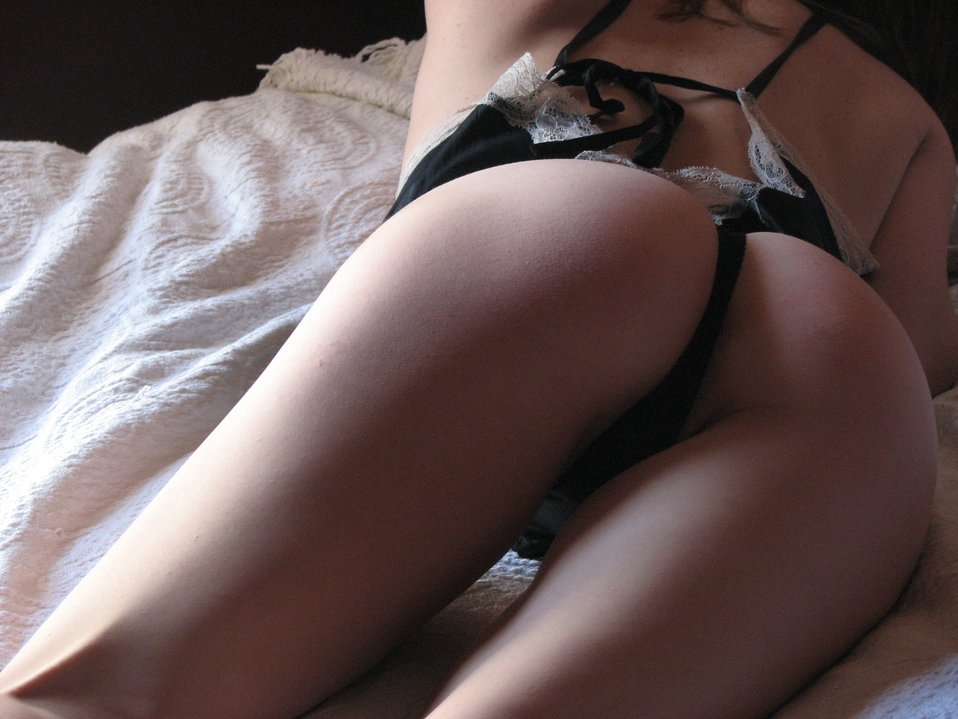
Female in panties laying face down on bed with her butt exposed.